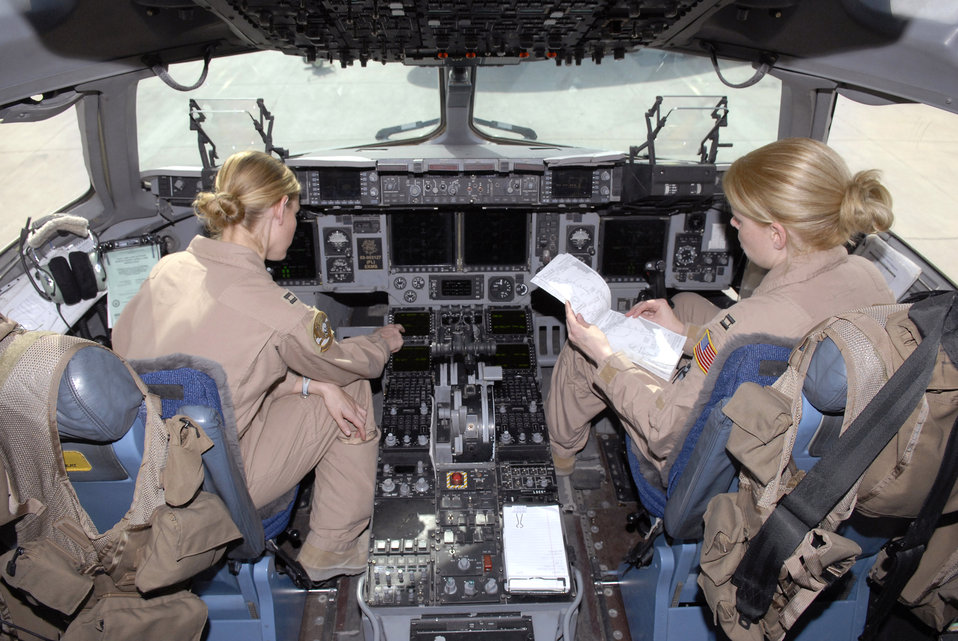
Women's History Month: All-female crew supports warfighters

Captains Kate Bufton and Emily Nelson review flight information before they depart on a mission in a C-17 Globemaster III March 19 at an air base in Southwest Asia. They were part of an all-female flight crew for the 816th Expeditionary Airlift Squadron. Captain Bufton is a co-pilot from Charleston, S.C. Captain Nelson is the aircraft commander from Orange, Calif. Both are deployed from Charleston Air Force Base, S.C.